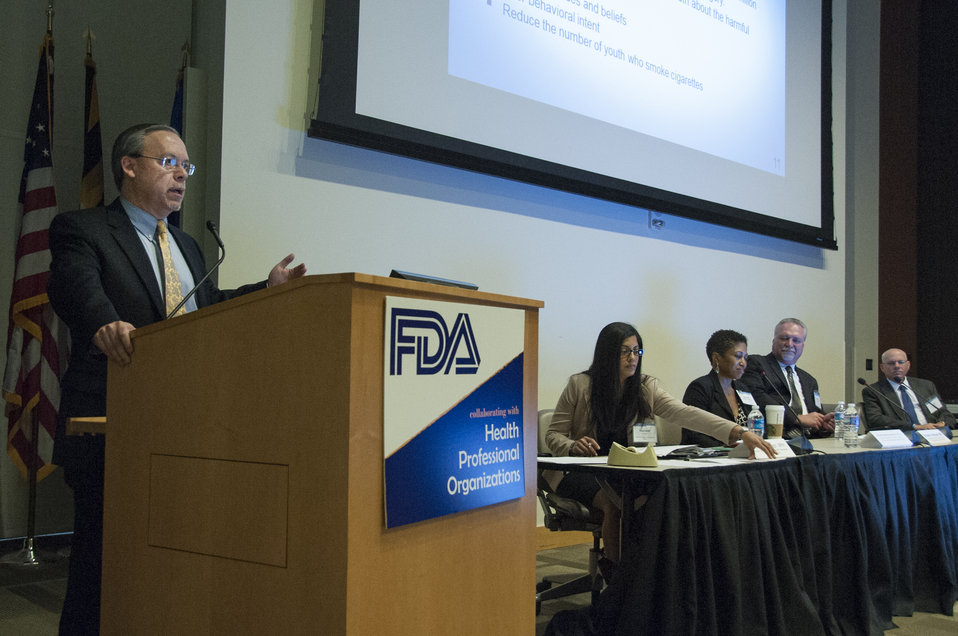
FDA's 2014 Health Professional Organizations Conference (1111)

May 14, 2014; At podium: Mitch Zeller, JD, Director of FDA's Center for Tobacco Products (CTP). At FDA's third annual Health Professional Organizations Conference, some of FDA’s most senior leaders exchanged views and discussed issues of mutual interest with senior representatives from key health professional organizations. To learn more, go to FDA Voice.

This photo is free of all copyright restrictions and available for use and redistribution without permission. Credit to the U.S. Food and Drug Administration is appreciated but not required.

Privacy and use information: www.flickr.com/people/fdaphotos/